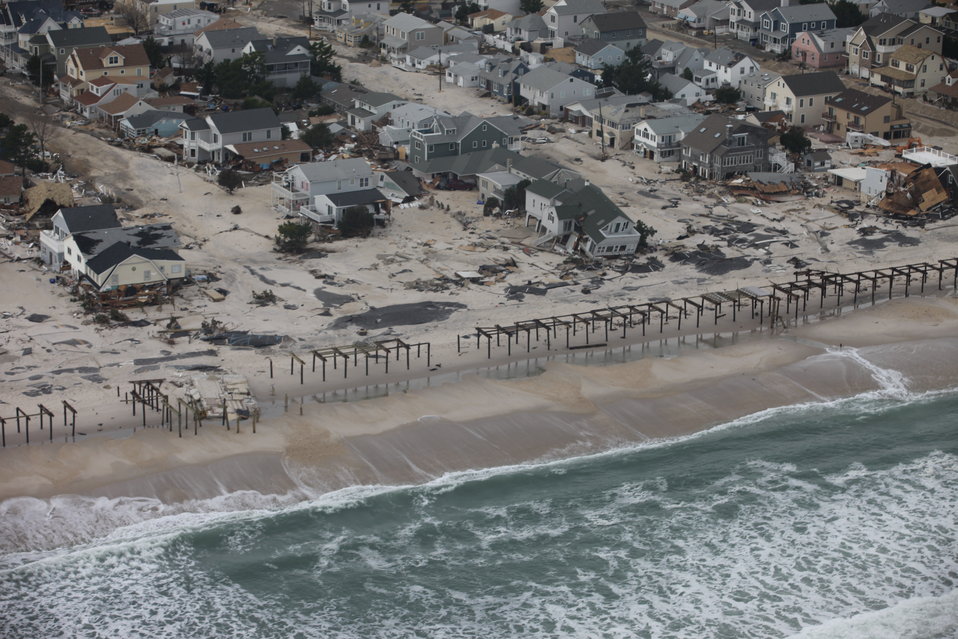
Aftermath of extensive flooding along New Jersey shore

Aerial photo of damaged homes along New Jersey shore after Hurricane Sandy.